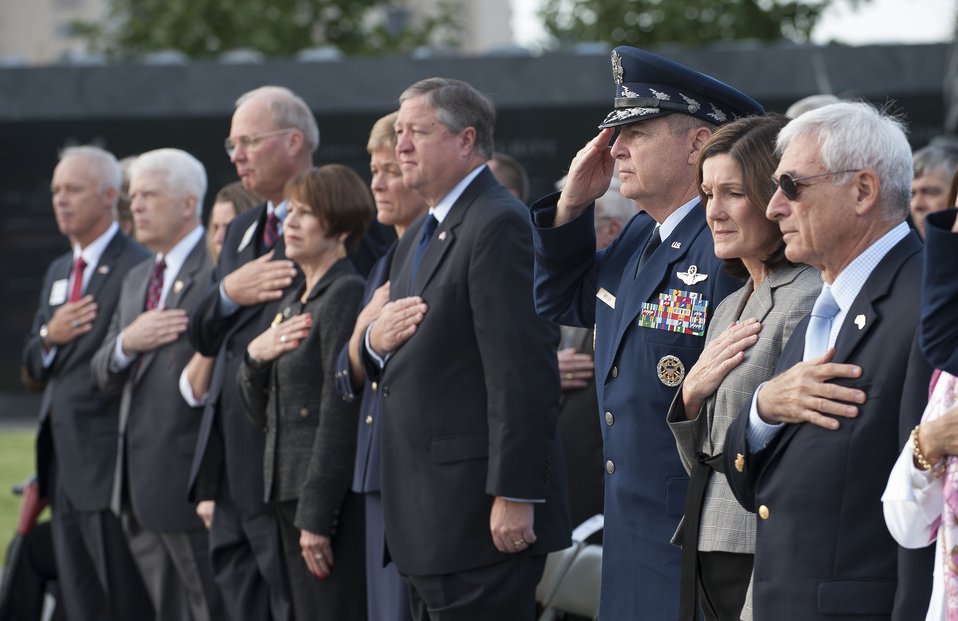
Air Force leaders attend AFA remembrance ceremony

Air Force senior leaders and members of the Air Force Association gathered at the Air Force Memorial in Arlington, Va., Sept. 16, 2012, for the Air Force Association's annual wreath laying ceremony commemorating AFA members who died in the last year. On hand to lay the wreath were: Secretary of the Air Force Michael Donley, Air Force Chief of Staff Gen. Mark A. Welsh III, the Air Force Association's Chairman of the Board S.Sanford Schlitt and the Senior Enlisted Leader to the Chief, National Guard Bureau Chief Master Sgt. Denise Jelinski-Hall.